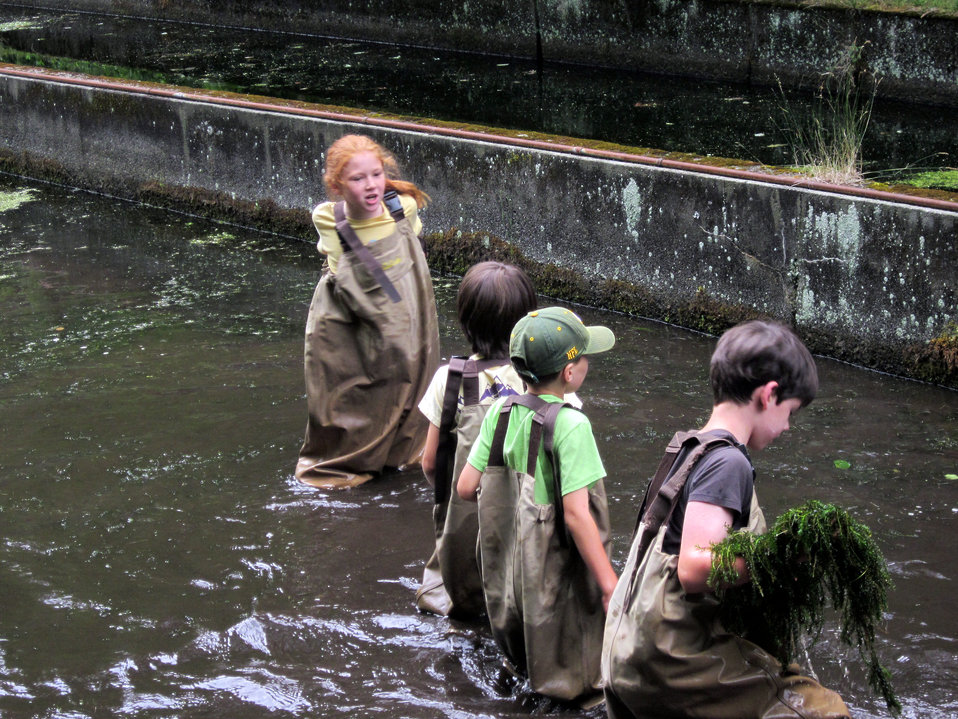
Nature day campers to the rescue

Sunderland, MA, July 26, 2012: Nature day campers from the Hitchcock Center for the Environment clear submerged plants that were clogging up outdoor fish raceways at Richard Cronin National Salmon Station. Campers used their feet to dislodge the plants.